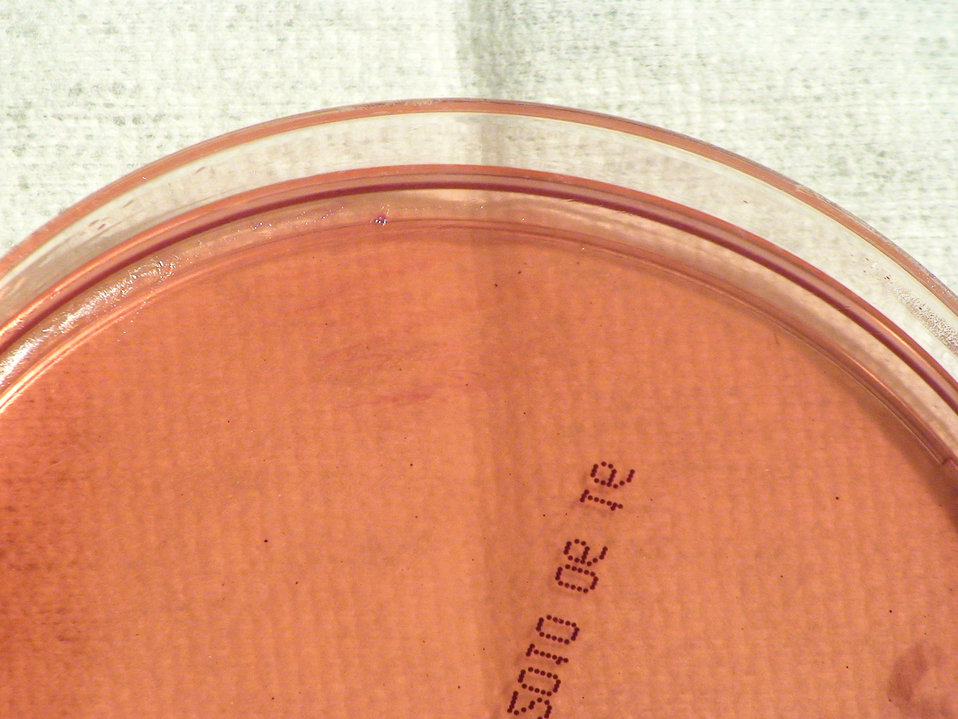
This photograph depicts the lack of colonial growth displayed by Gram-negative Brucella abortus bacteria, which was grown on a medium of MacConkey agar, for a 24 hour time period, at a temperature of 37�C. Brucella spp., bacteria grow very poorly, or not at all, on MacConkey agar. Members of this genus, including B. abortus, cause a disease known as brucellosis.